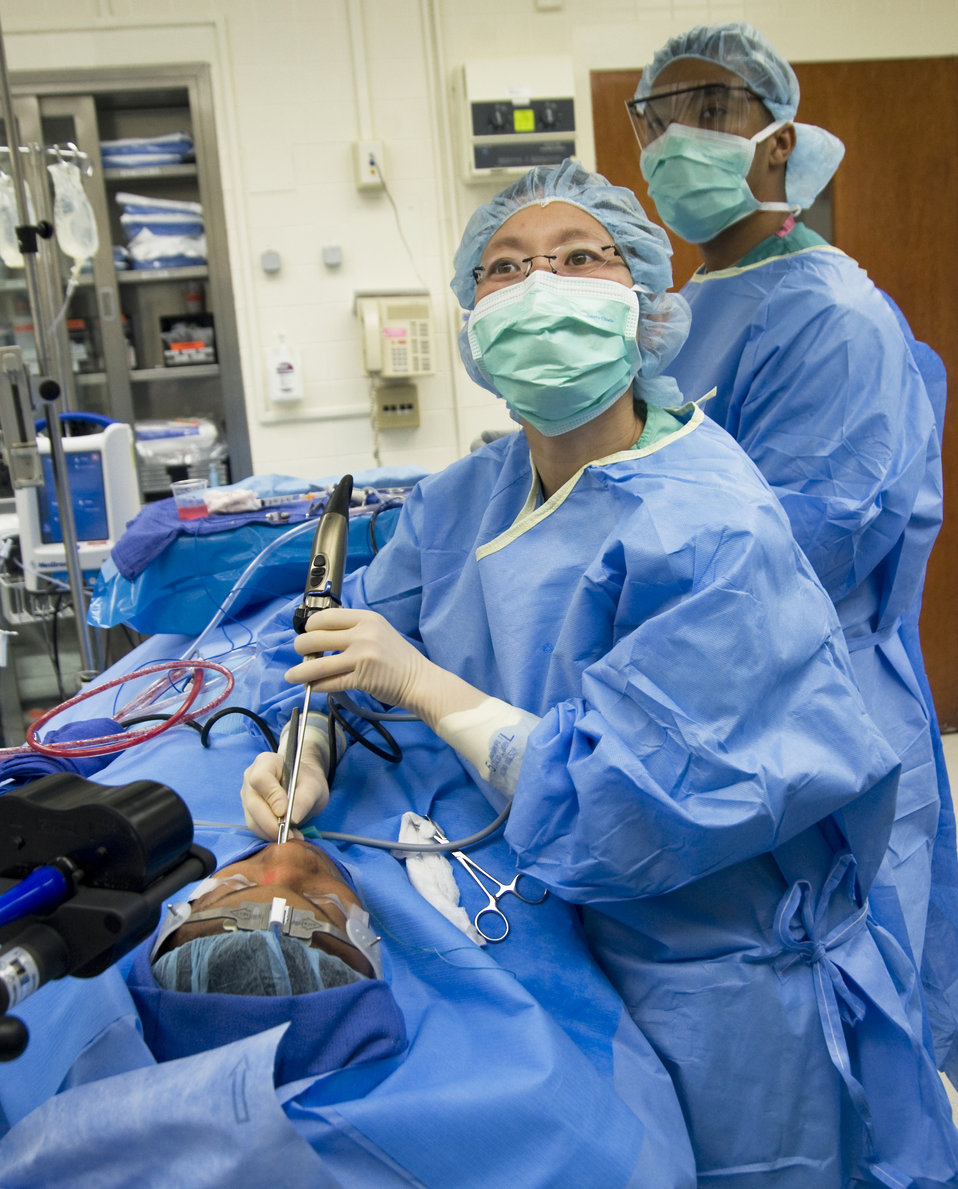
Ambulatory Surgery Clinic

While viewing a monitor which assists her during endoscopic sinus surgery in real time, Dr. Carrie Flanagan, 779th Surgical Operations Squadron staff otolaryngologist uses an endoscope camera and Medtronic sinus shaver to perform an intricate ENT procedure May 11, 2012.